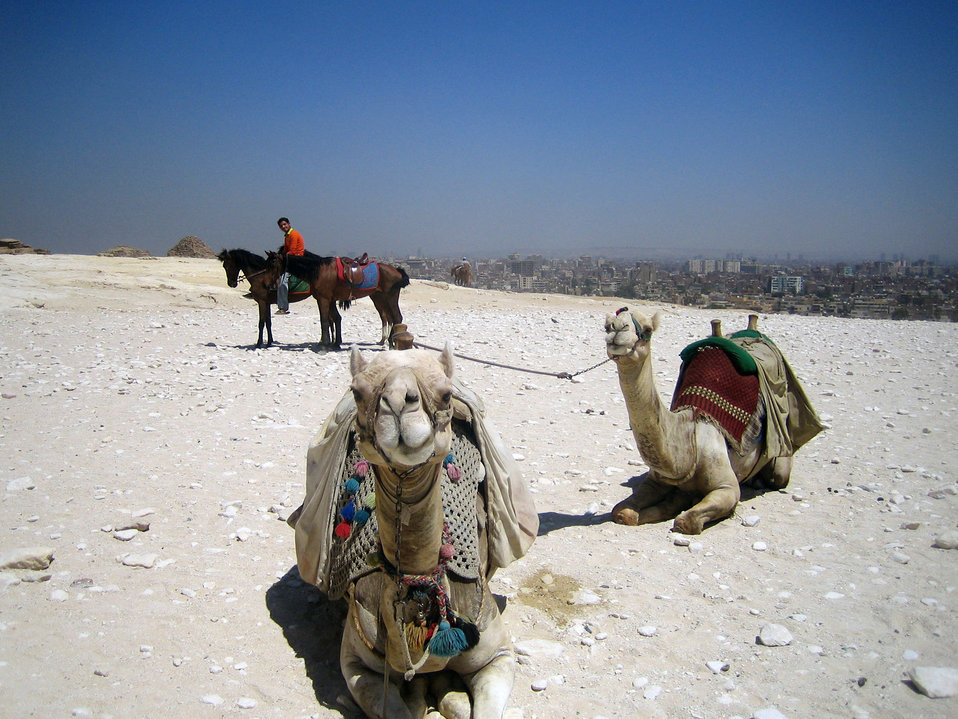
Camels posing.